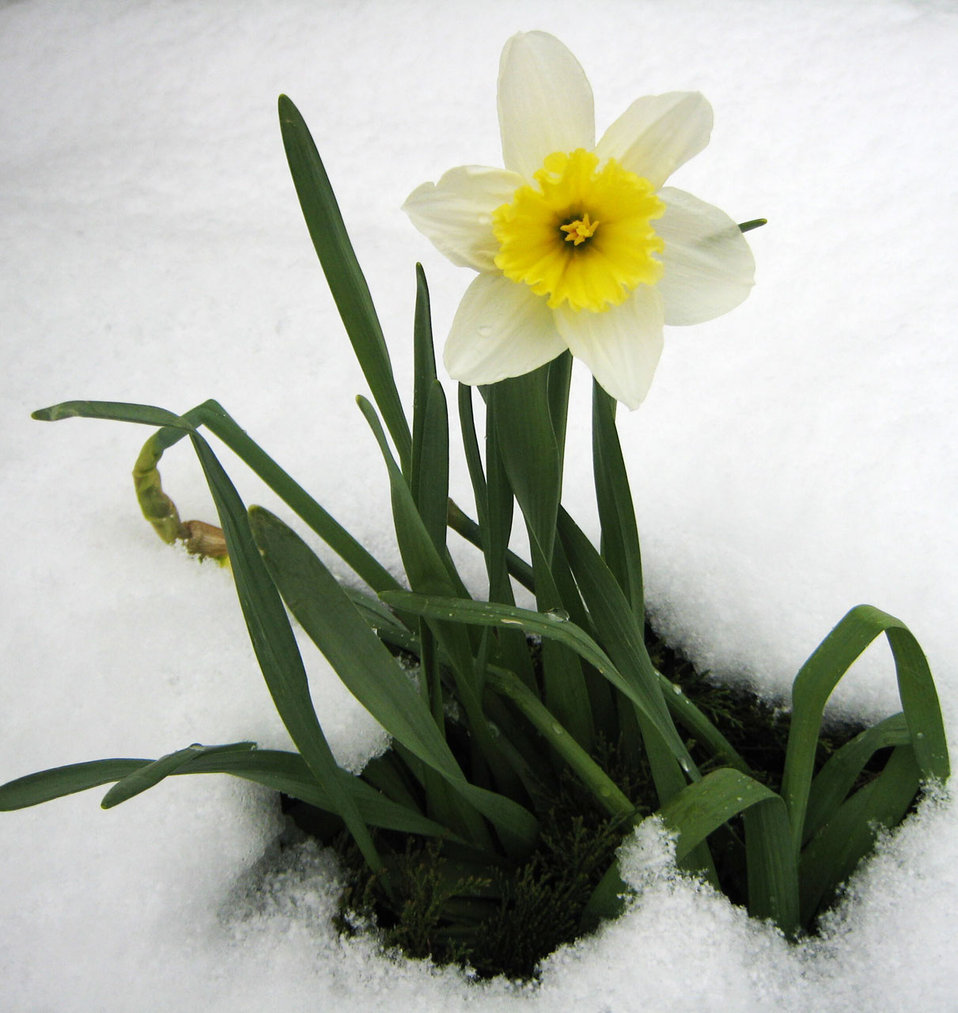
Daffodil in the snow

Late spring snowstorm covers blooming daffodils.